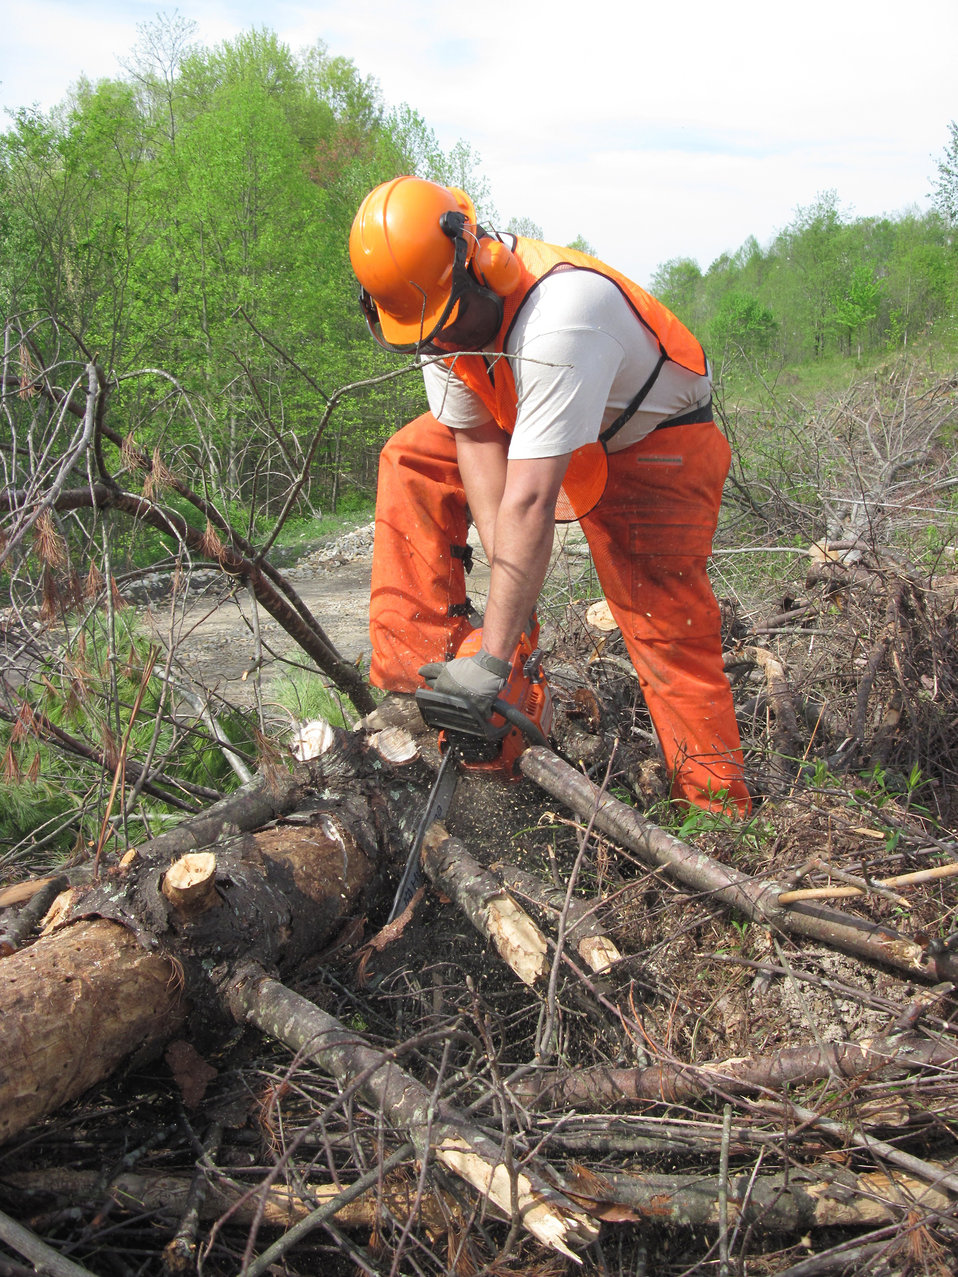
Reserve Airmen begin work on Boy Scout Jamboree site

Tech. Sgt. Teo Mejaperatla de-limbs a tree April 10, 2011, during construction of a Boy Scout Jamboree site in Beckley, W. Va. Twenty two Reservists from Joint Base Elmendorf-Richardson, Alaska, began work on the 10,600 acre site. Sergeant Mejaperatla is assigned to the 477th Civil Engineer Squadron.